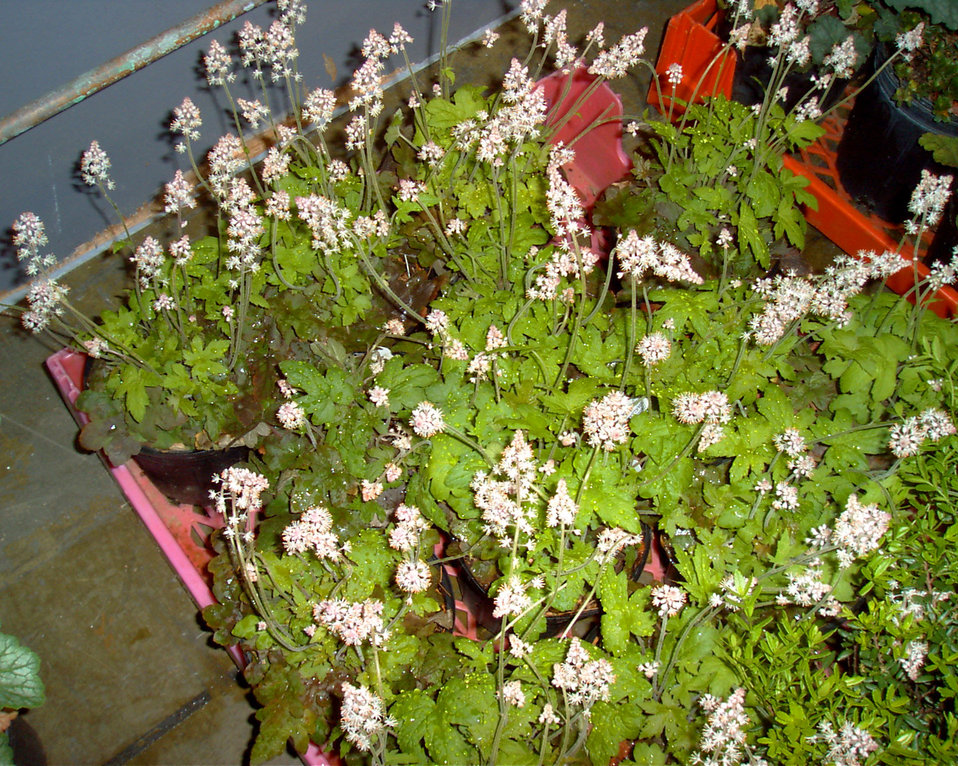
Oakleaf foamflower

Tiarella cordifolia ‘Oakleaf’ (Oakleaf foamflower), a native plant

Learn more about EPA’s Exhibit at the 2010 Philadelphia International Flower Show:
www.epa.gov/reg3esd1/garden/flower show.htm
www.epa.gov/reg3esd1/garden/flower show plants.htm
www.epa.gov/reg3esd1/garden/pdf/flowershow2010.pdf (6 pp, 864K)